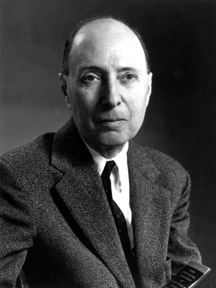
Eugene Wigner.